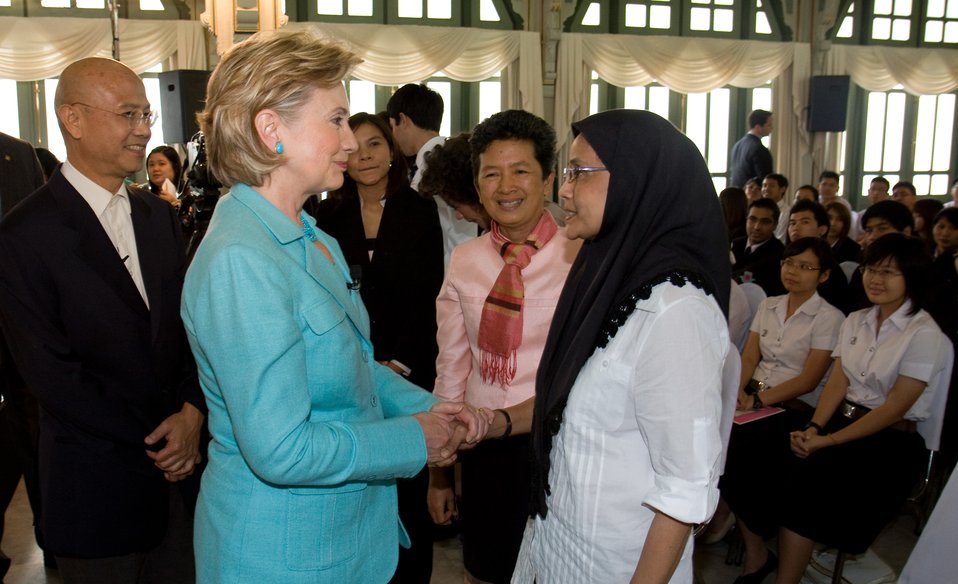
Secretary Clinton at Phyathai Palace

U.S. Secretary of State Hillary Rodham Clinton is greeted by Angkhana Neelaphaijit, President Working Group on Justice for Peace after an interview at Phyathai Palace in Bangkok, Thailand July 22, 2009.